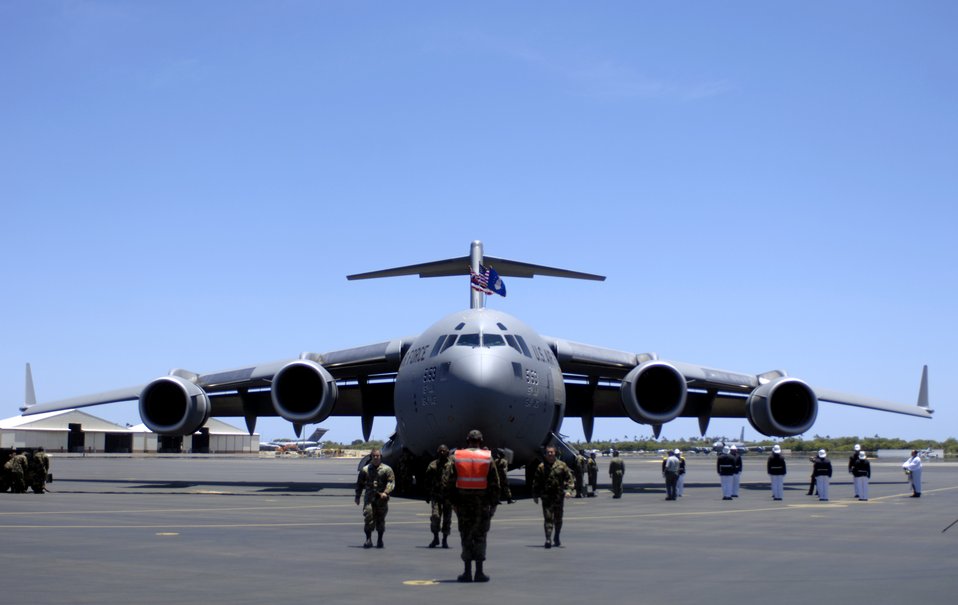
Hickam AFB welcomes its final C-17

Aircraft maintainers march away from a C-17 Globemaster III after parking the aircraft at Hickam Air Force Base, Hawaii, on July 18. The